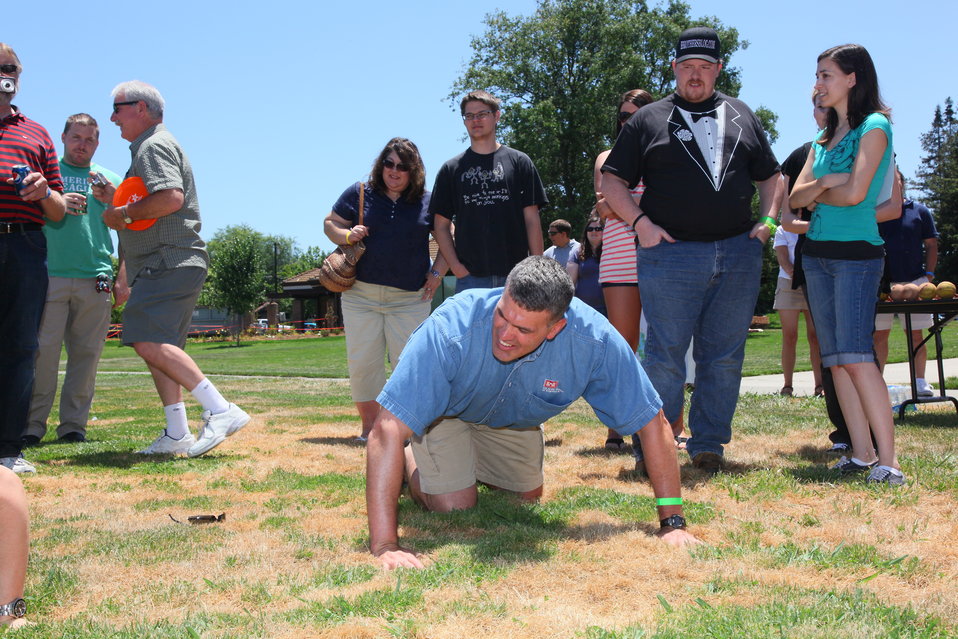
2011 Annual Picnic